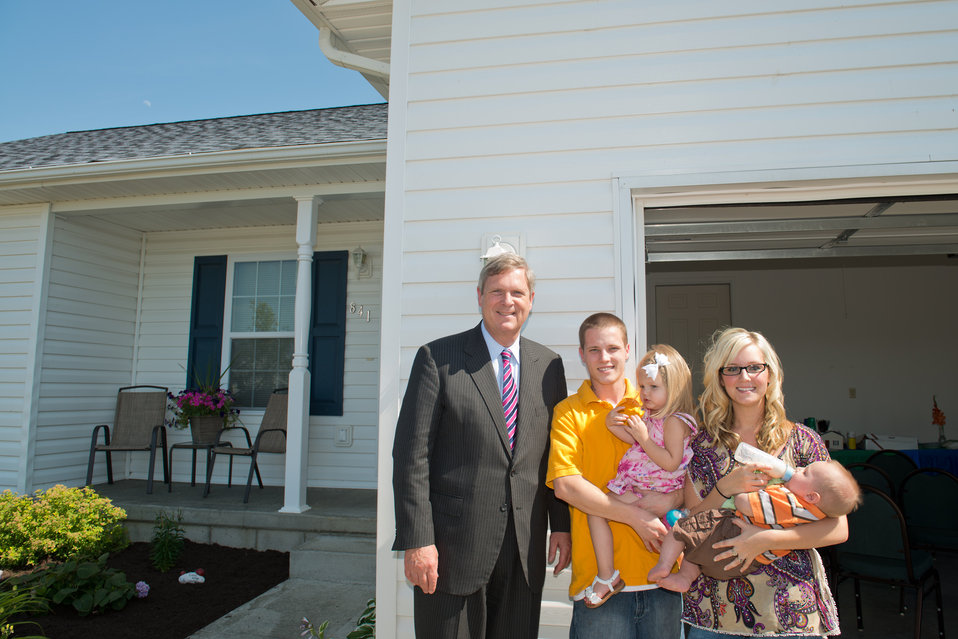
Agriculture Secretary Tom Vilsack joins the Noel family (left to right), Coty, Jacquie, Alandriah and Ryker in commemorating National Homeownership Month at Arbor Village in Fayette County, OH on Thursday, June 28, 2012.